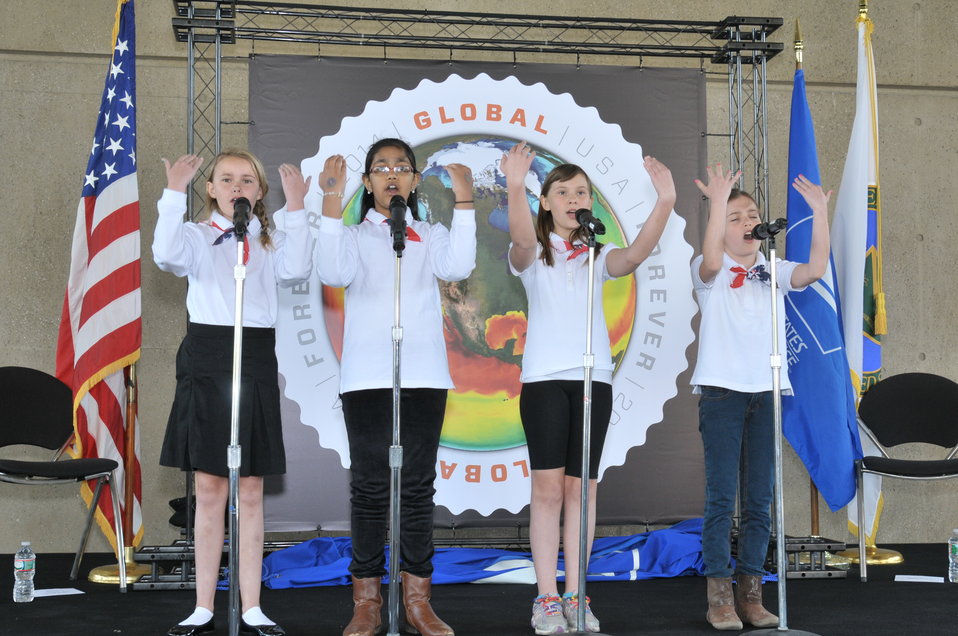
U.S Postal Services introduces a new Global: Sea Surface temperatures forever stamp at the Earth Day program at Department of Energy on April 22, 2014. ( DOE Deputy D.Poneman,T.Day, C.Williams, C.Anderson II, J.Colin Ph.D, Dr. K. Sullivan, K.Tobin Ph.D, W. Gicher Jr)